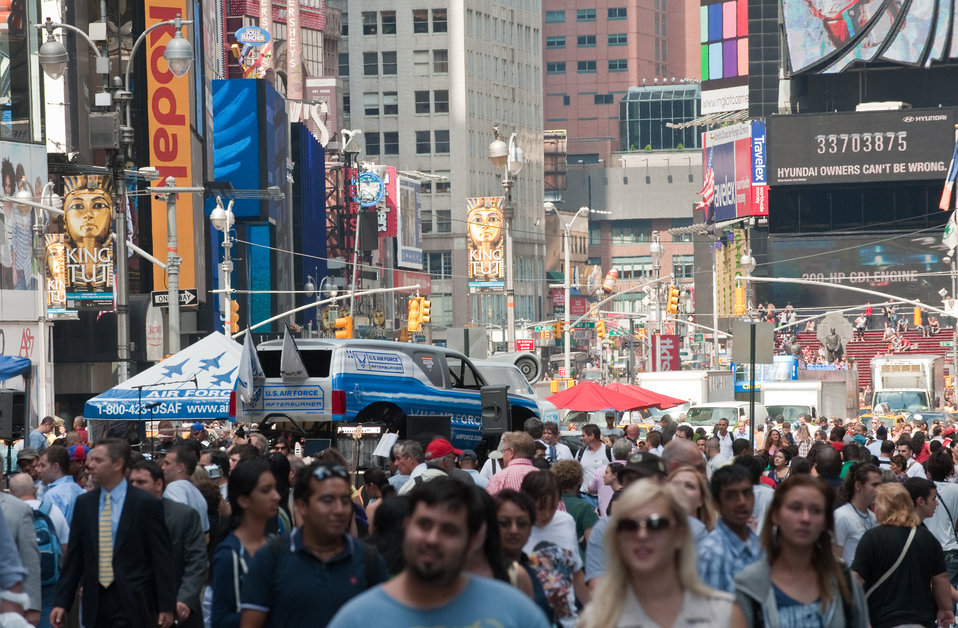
Air Force Week Now Showing in Times Square

The Air Force Monster Truck Afterburner and the A-10 Monster Truck are heads and shoulders above the thousands of national and international visitors in Times Square who saw several Air Force awareness displays Aug. 26, 2010, for Air Force Week New York City.